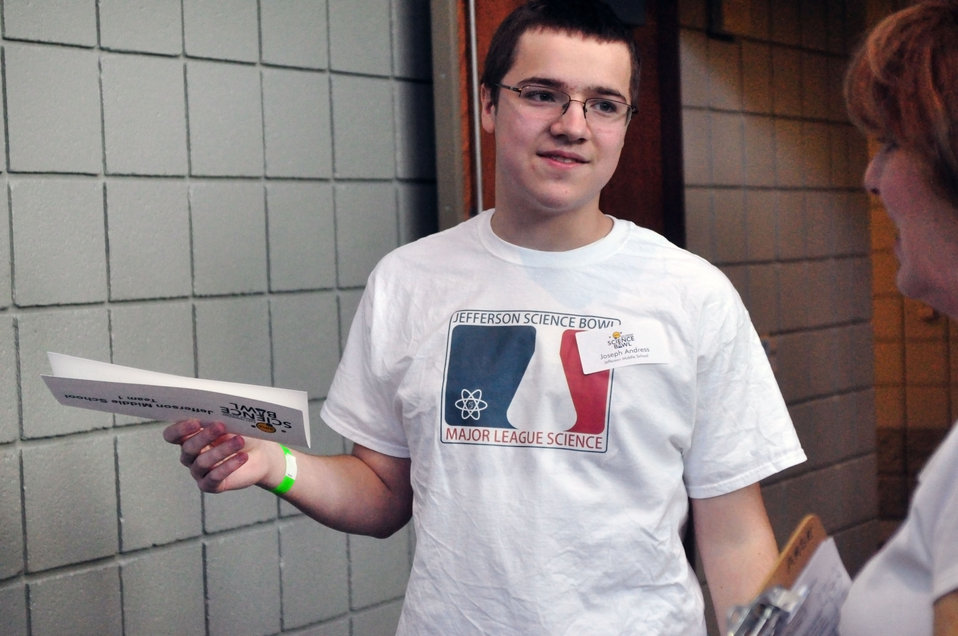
DOE Middle School Science Bowl

14-017 DOE photo Lynn Freeny 2-1-2014 Oak Ridge Tennessee